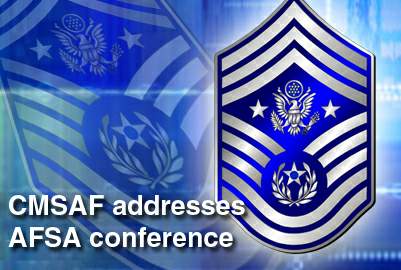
CMSAF talks integrity, family, training

Chief Master Sgt. of the Air Force James A. Roy praised the enlisted force and highlighted several of his key priorities during a speech at the 2009 Air Force Sergeants Association Professional Airmen's Conference in Atlanta.